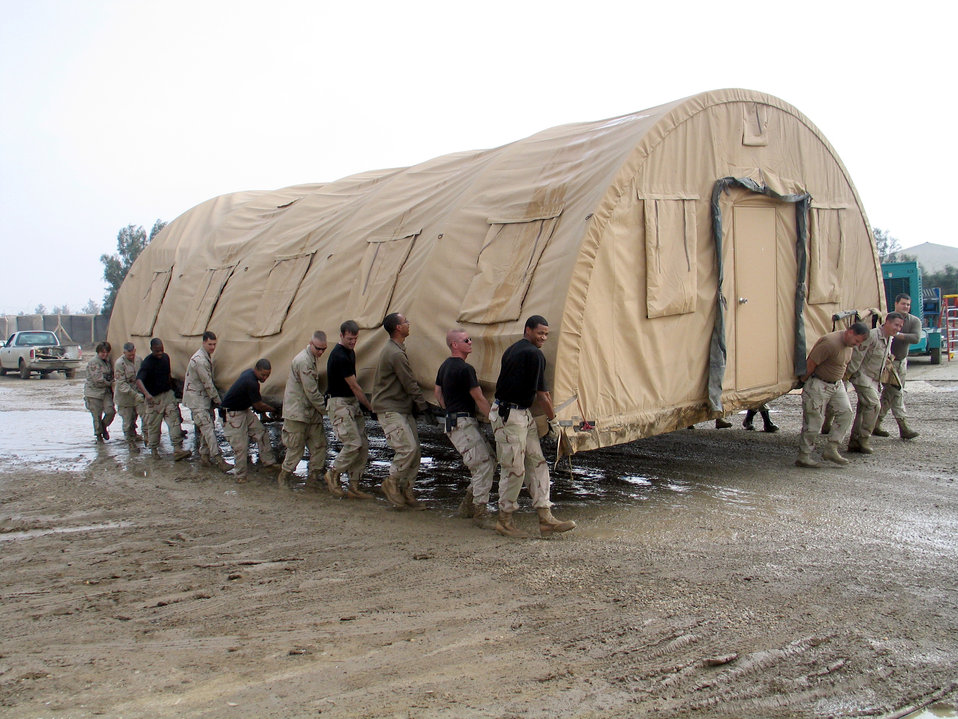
On the move

TALLIL AIR BASE, Iraq -- Airmen from the 332nd Expeditionary Communications Squadron use teamwork to move a tent to avoid rising water and excessive mud caused by recent rain here.